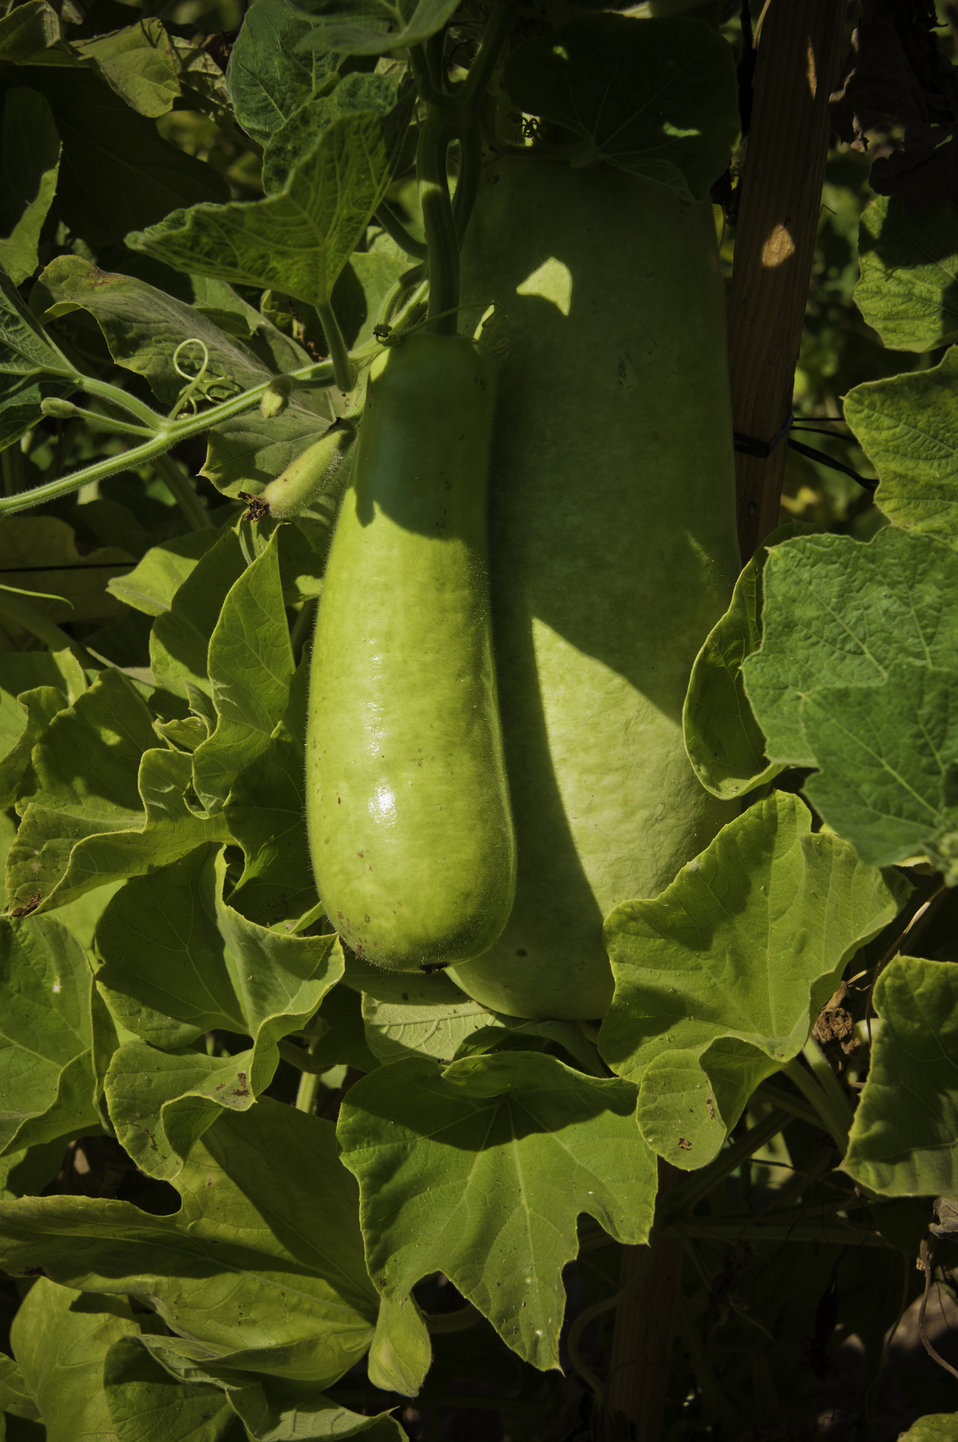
Opo squash grown on May's Flower's Farm in Sanger, California on Thursday, August 29, 2013.